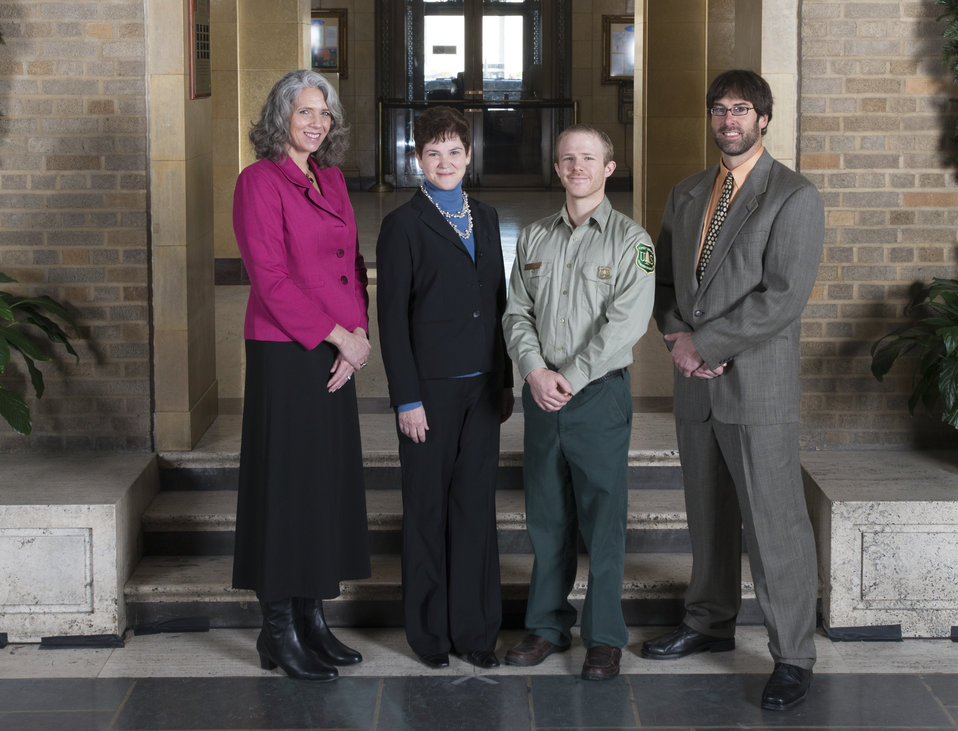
Agriculture Deputy Secretary Krysta Harden stands with the Shoshone National Forest Leadership Team, Forest Service from Cody, WY on the patio at the U.S. Department of Agriculture (USDA) in Washington, D.C. on Wednesday, Dec. 11, 2013.The team received the Secretary’s Honor Award for their efforts to cultivate a more diverse and inclusive work environment.